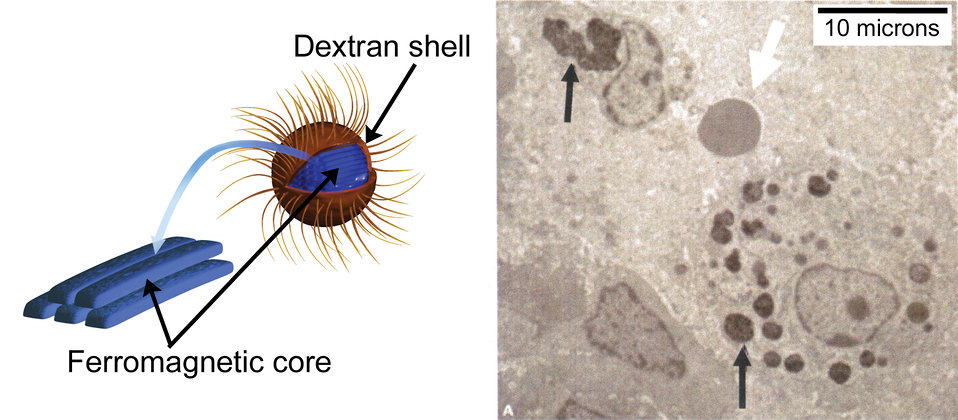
Nanoparticles; Medicine

An iron-centered nanoparticle (left) analyzed at NIST's Center for Neutron Research has a coating of the sugar dextran, whose tendrils prevent groups of the particles from clumping. When tumor cells ingest them (right), the particles still congregate closely enough to share heat when stimulated by a magnetic field, killing the cells. White arrow indicates a red blood cell.